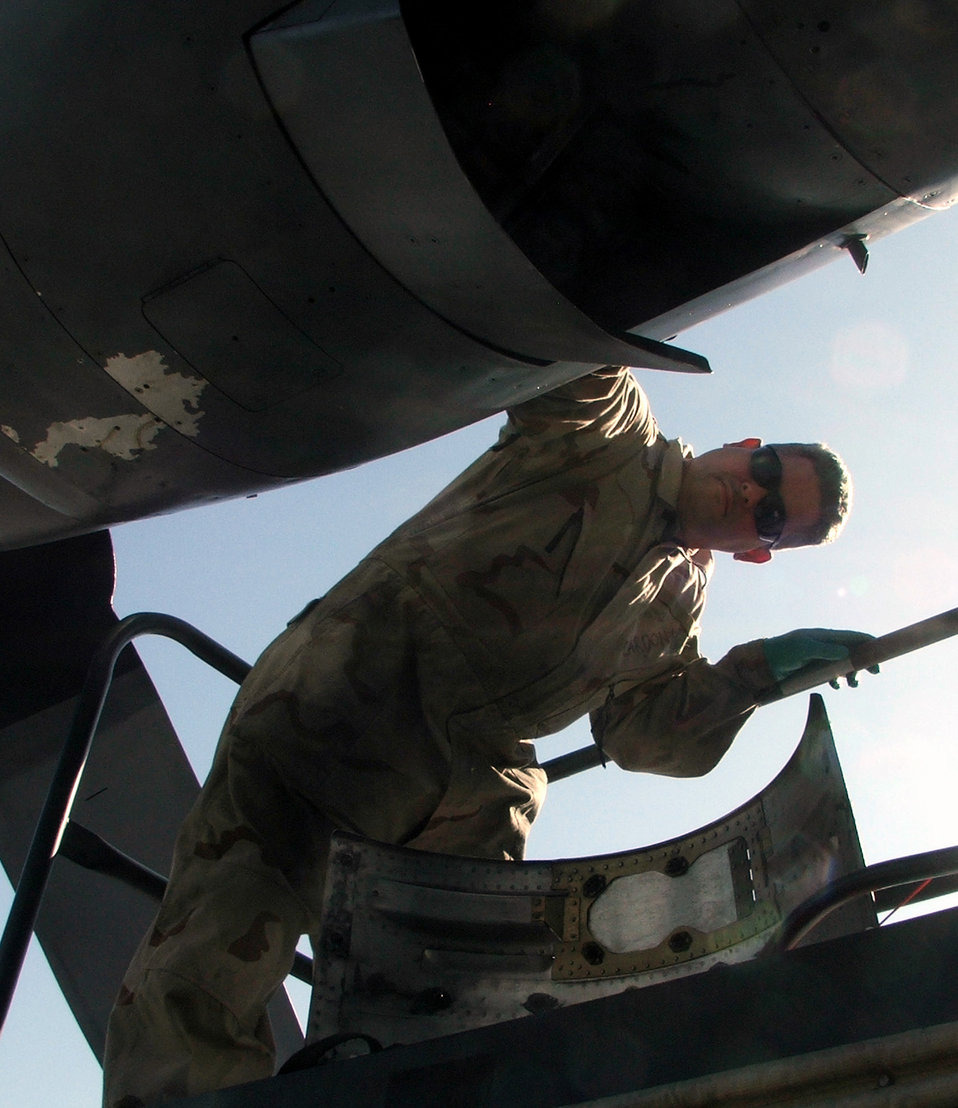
C-130 maintainers keep mission-capable rates high

KARSHI-KHANABAD AIR BASE, Uzbekistan -- Tech. Sgt. Noel Cardona reassembles a C-130 Hercules engine compartment here April 14. He is a C-130 engine mechanic with the 774th Expeditionary Airlift Squadron and is deployed from the Ohio Air National Guard at Mansfield.